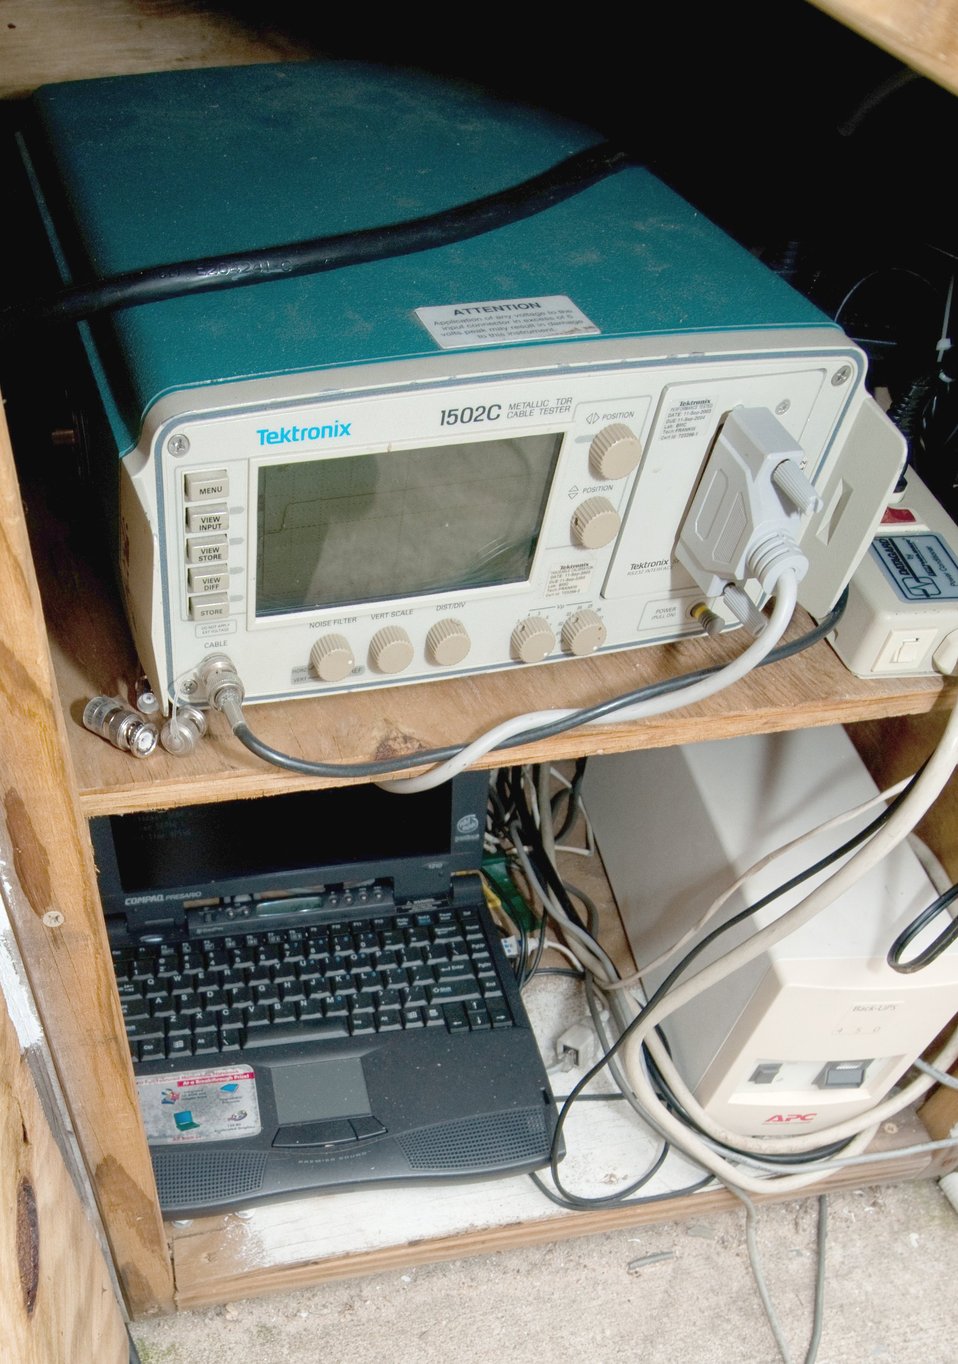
U.S. Department of Agriculture (USDA), Agriculture Research Service's Jackson Fisher (not seen), showed the 12 Borlaug Fellows from Afghanistan’s Ministry of Agriculture, Irrigation and Livestock (MAIL), the metallic Time Domain Reflectometry (TDR) cable tester, laptop and uninterrupted power supply of a Soil Plant Atmosphere Research (SPAR) unit, during their tour of the Global Climate Change Lab, in Beltsville, MD, on Wednesday, September 21, 2011. SPAR units provide precise control of the major environmental variables influencing crop growth including temperature, humidity, and atmospheric carbon dioxide concentration. The SPAR units are fully automated to measure crop canopy gas exchange including photosynthesis, respiration, transpiration and water use efficiency.